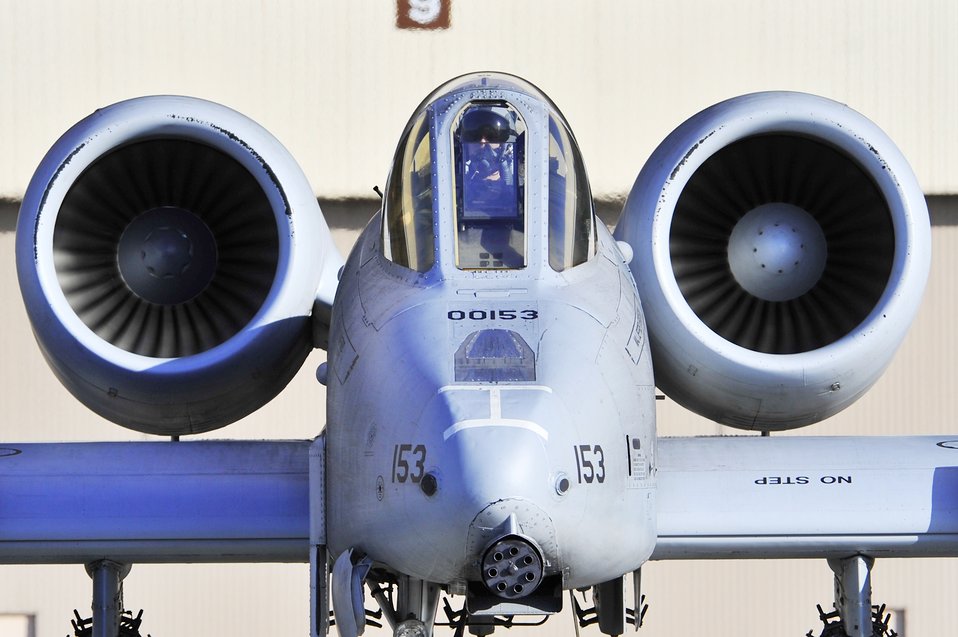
In your face!

An A-10 Thunderbolt II makes its way to the runway during Red Flag-Alaska, Oct. 9, 2009, at Eielson Air Force Base, Alaska. Red Flag-Alaska provides participants 67,000 square miles of airspace, more than 30 threat simulators, one conventional bombing range and two tactical bombing ranges. The A-10 is assigned to Osan Air Base, South Korea.